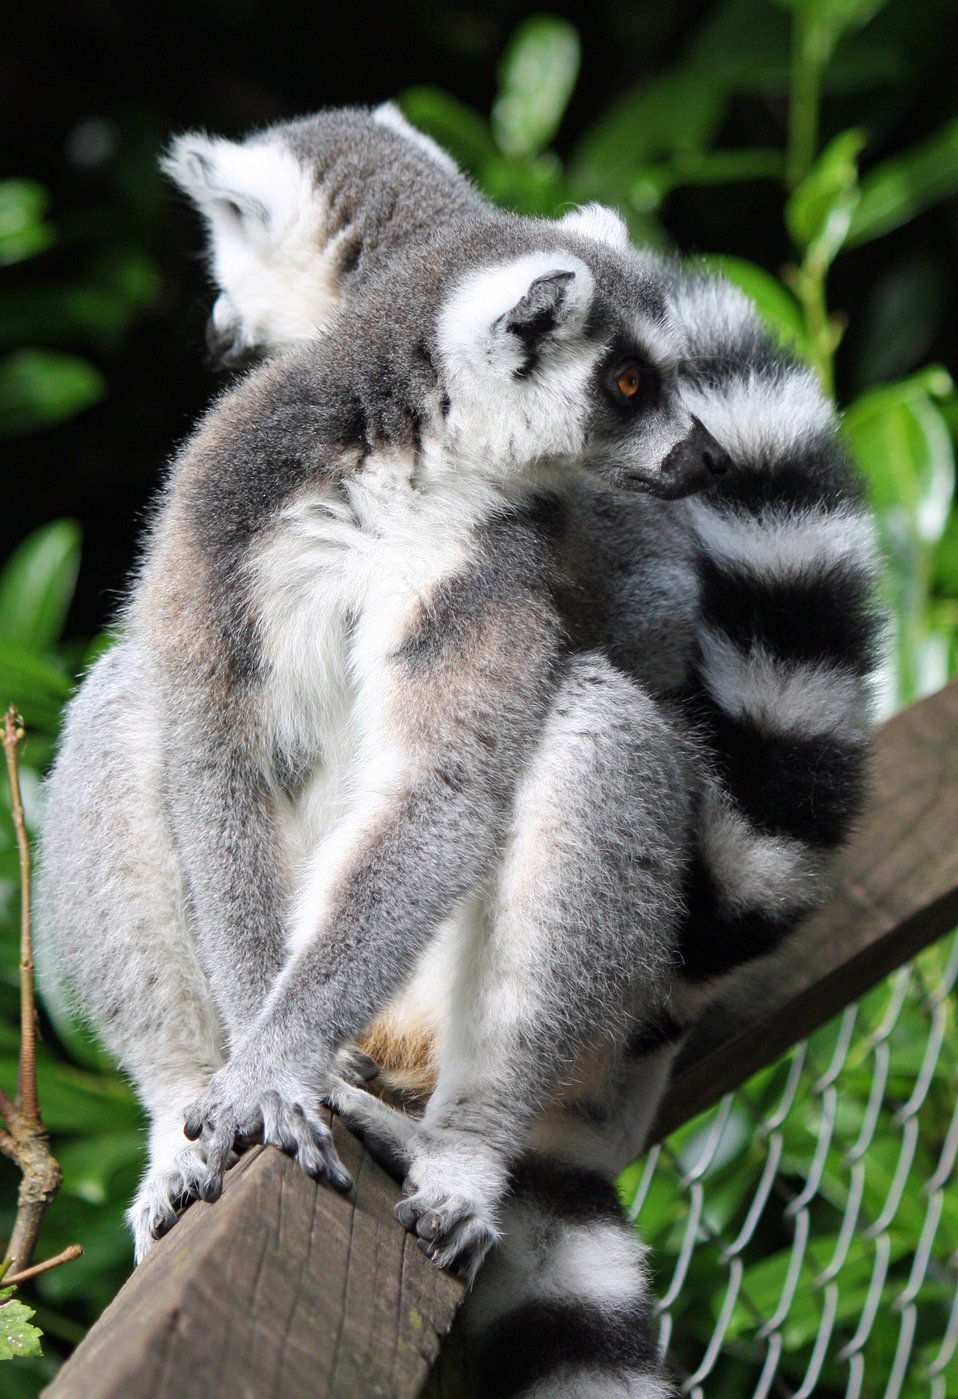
Lemur portrait

Close-up portrait of a cute ring-tailed lemur.